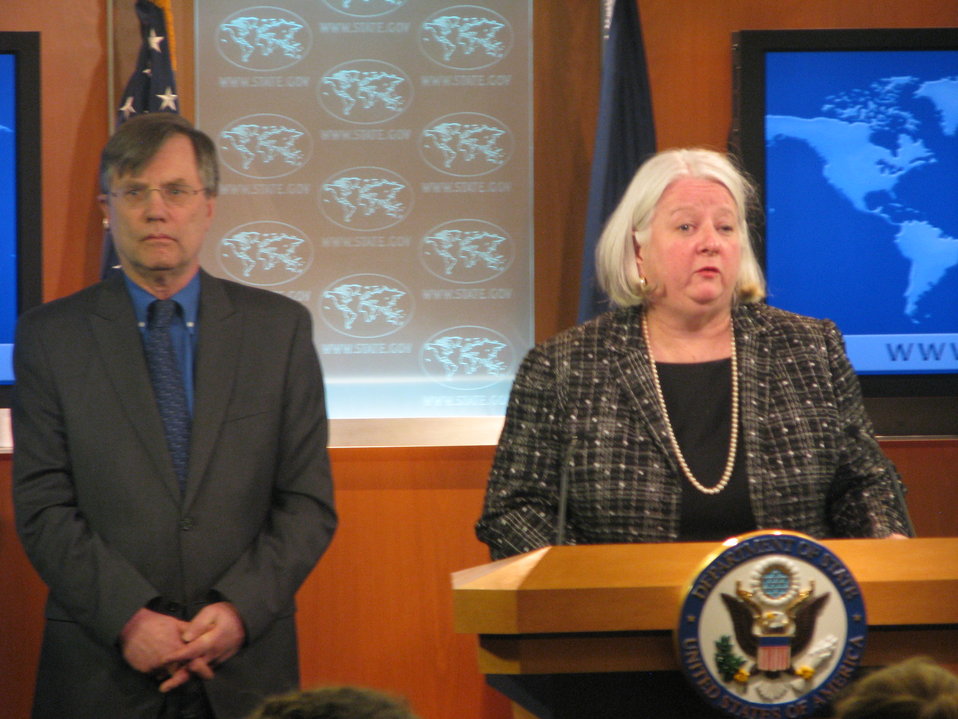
Deputy Assistant Secretary Sanderson, With Under Secretary Kennedy, Leads the Special Press Briefing

Deputy Assistant Secretary of State for Near Eastern Affairs Janet Sanderson, right, with Under Secretary of State for Management Patrick Kennedy, left, leads the Special Press Briefing on Libya at the U.S. Department of State in Washington, D.C., on February 25, 2011.